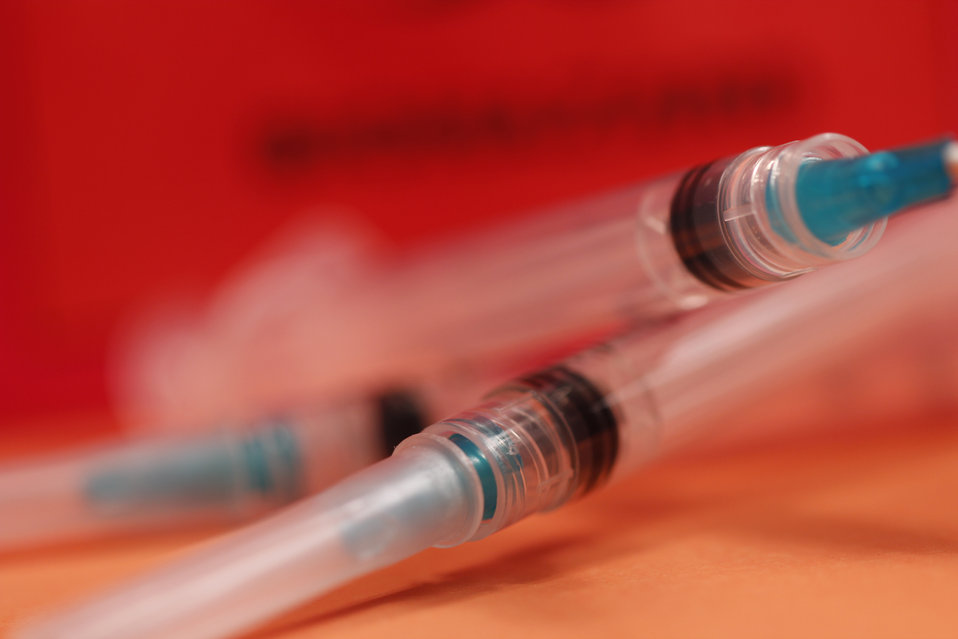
This image depicts a close view of the distal tips of three empty syringes. In this particular view, two of the metallic needles were safely sheathed in their protective plastic sleeves, while the needle on the far right was unsheathed, however, the metallic needle was not visible from this angle.